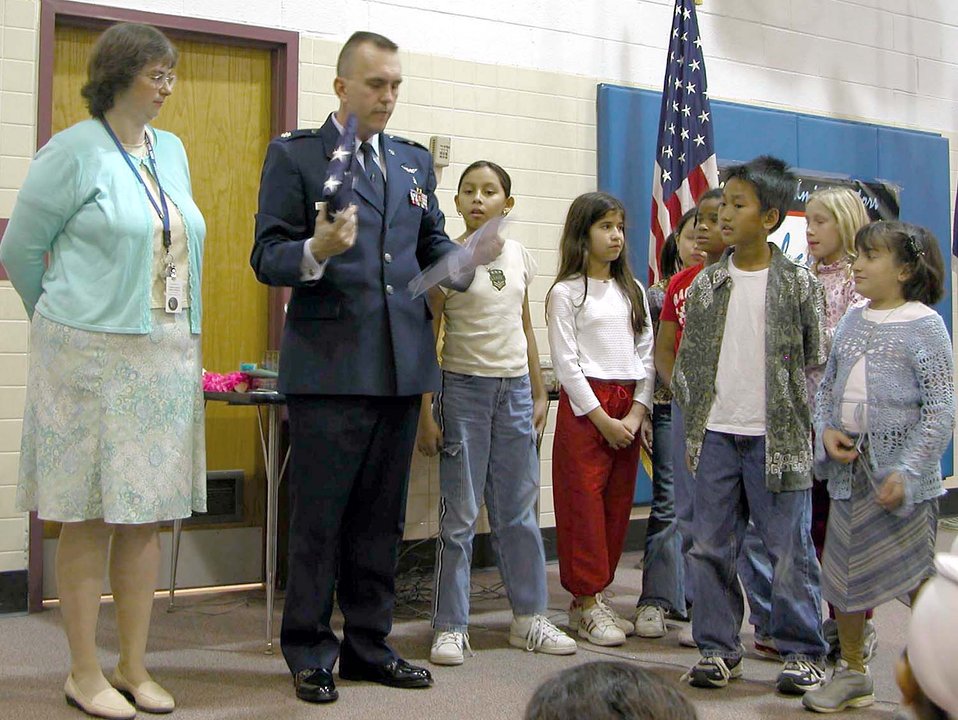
Baghdad Buddy

WASHINGTON -- For their support and appreciation for being